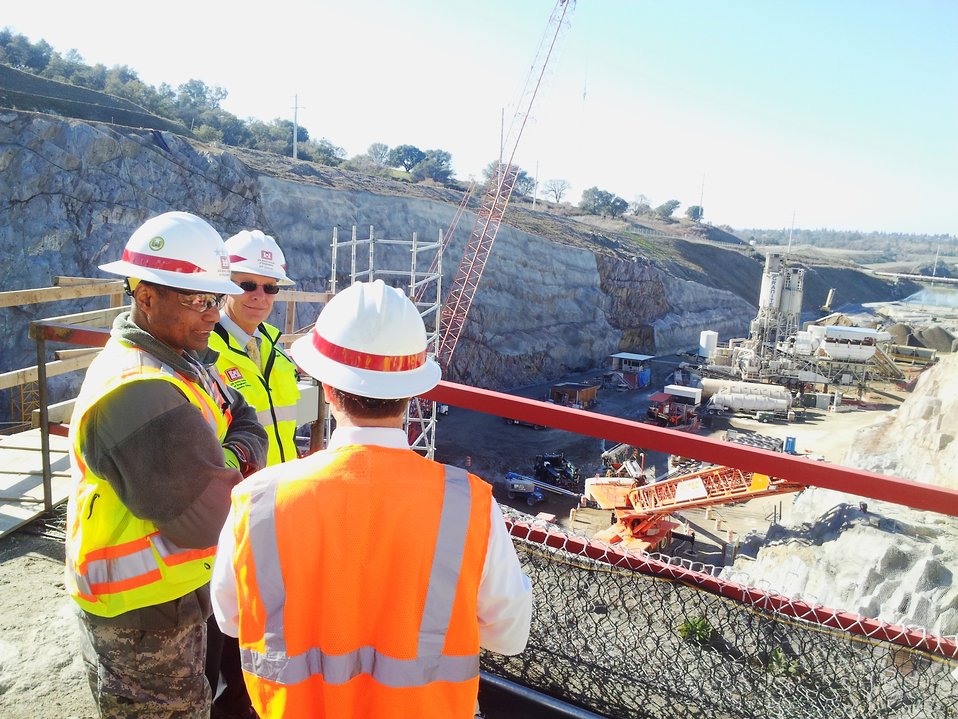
Corps commanding general visits Folsom Dam spillway project

Commanding general of the U.S. Corps of Engineers, Lt. Gen. Thomas P. Bostick (left), tours the Folsom Dam auxiliary spillway construction site in Folsom, Calif., Jan. 16, 2013, led by the project’s director, David Thomas (middle). Also pictured: Nathan Dietrich (right), district director for U.S. Rep. Doris Matsui.